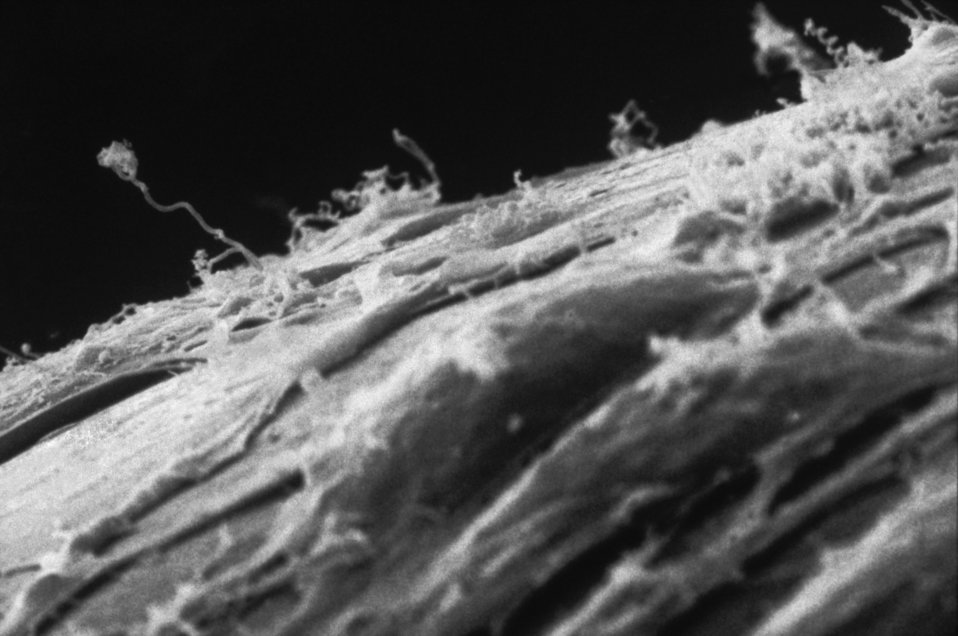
Electron micrograph of Treponema pallidum on cultures of cotton-tail rabbit epithelium cells (Sf1Ep).